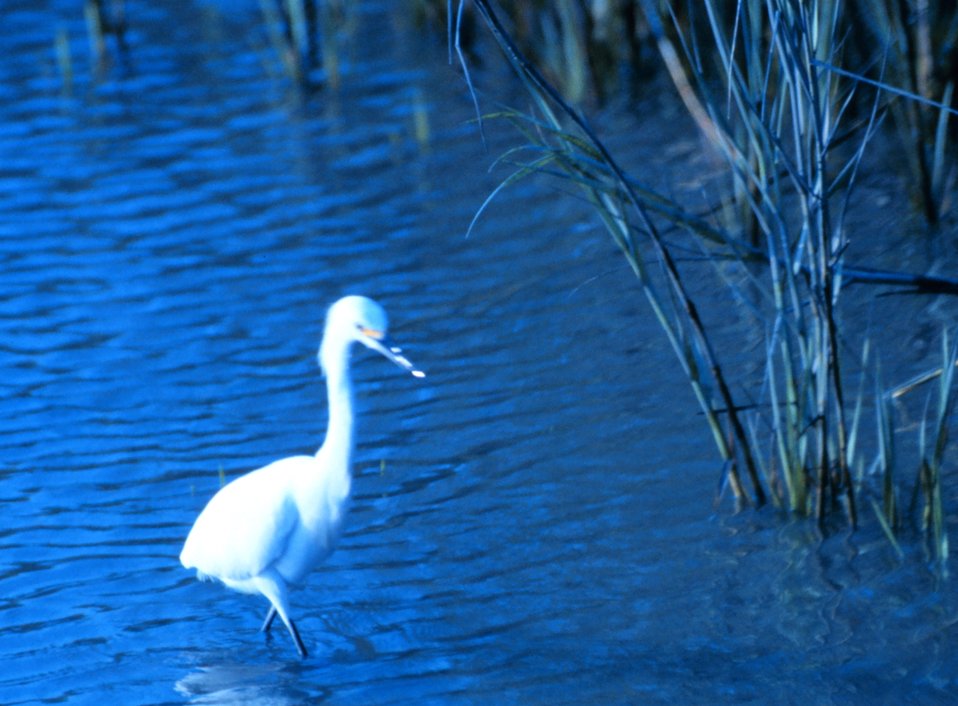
A great white egret in the tidal waters of Charleston harbor.